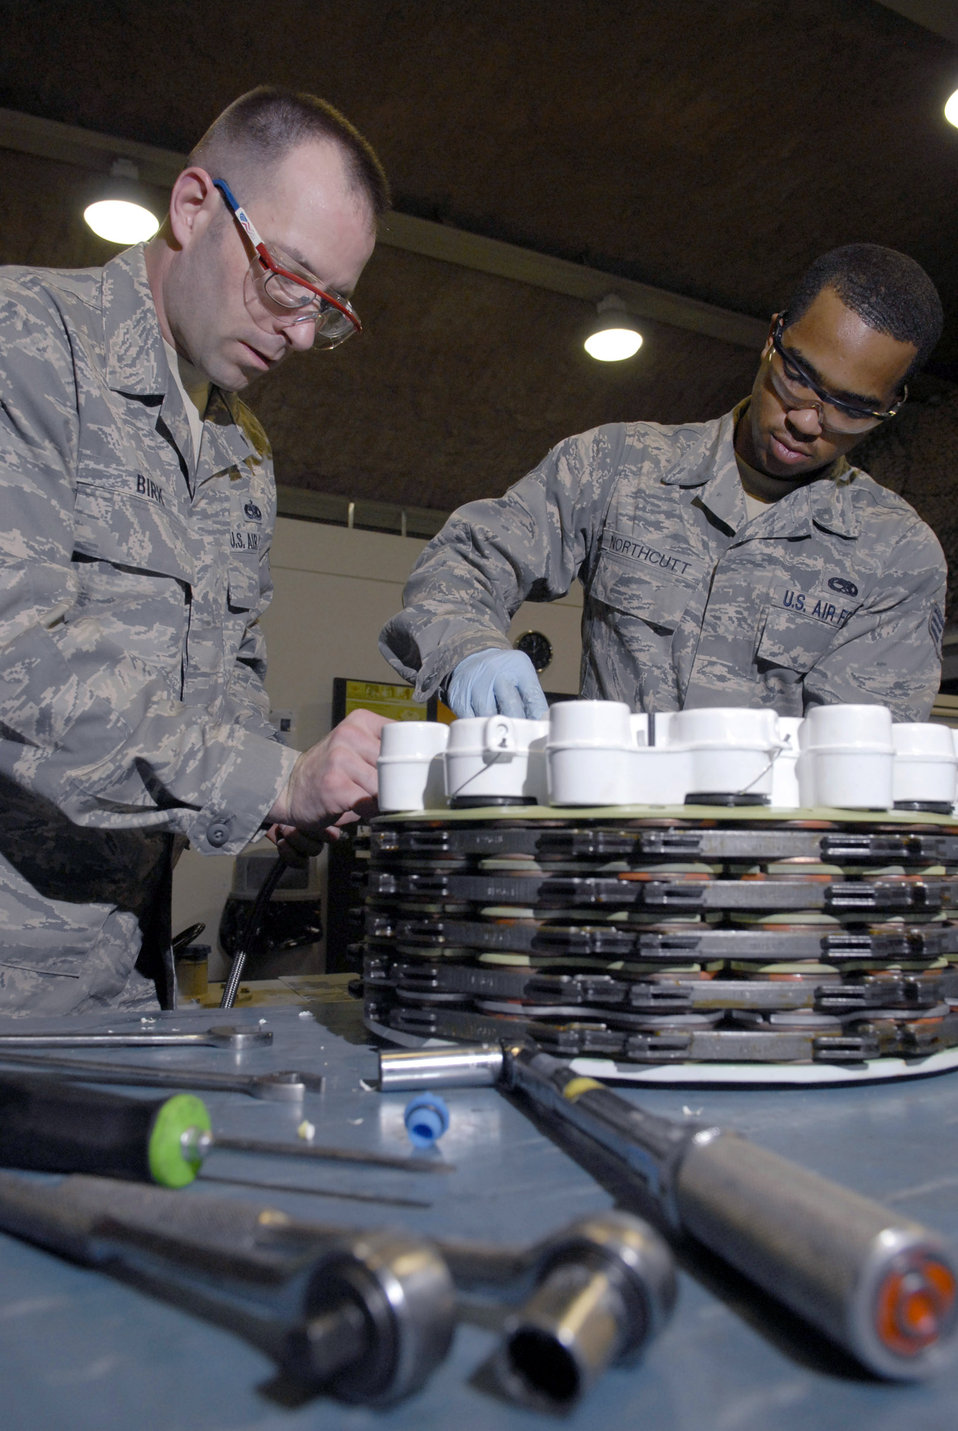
Take a brake

Tech. Sgt. Wayne Birk and Senior Airman Joseph Northcutt build a KC-135 Stratotanker steel brake assembly April 17 at an air base in Southwest Asia. Both Airmen are assigned to 379th Expeditionary Maintenance Squadron hydraulics shop which supports all of the C-135 airframes in the U.S. Central Command's area of responsibility.